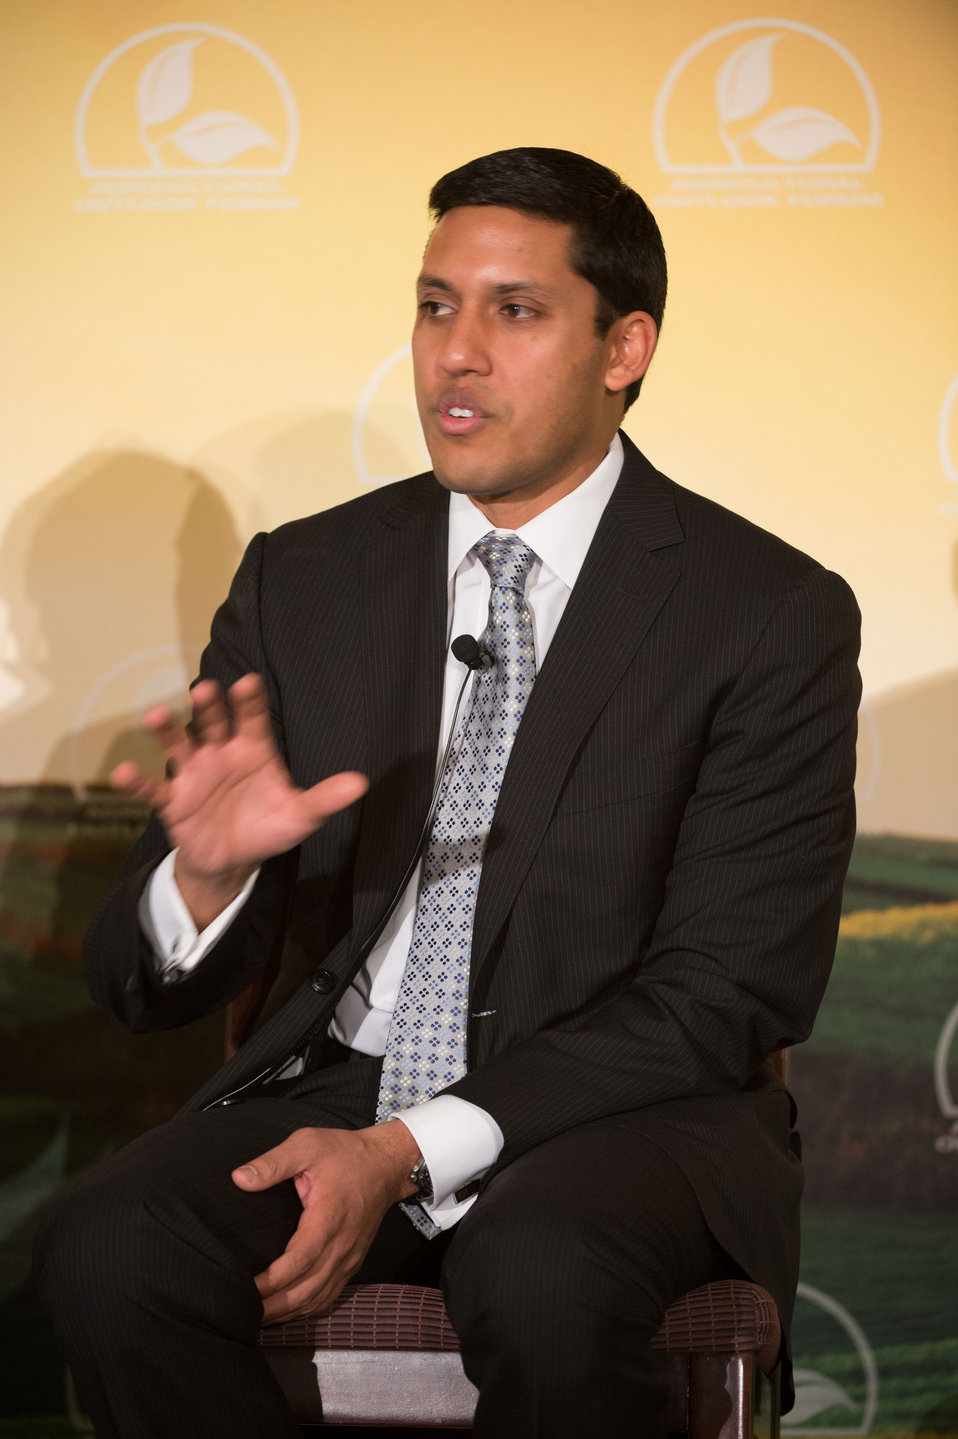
Building Markets Here and Abroad panelist U.S. Agency for International Development (USAID) Administrator Rajiv Shah at the 2014 Agricultural Outlook Forum in Arlington, VA., on Thursday, Feb. 20, 2014. The U.S. Department of Agriculture's (USDA) annual Agricultural Outlook Forum brings together the agricultural community to discuss policy, trade, science, rural development, and the economic outlook for the coming year. The Forum also focuses on forestry, health and nutrition issues, and the changing dynamics and face of rural America.USDA photo by Bob Nichols.